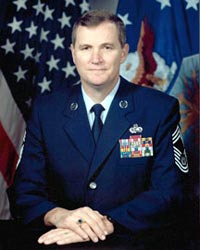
CMSAF Eric Benken

1950's -- Chief Master Sgt. of the Air Force Eric Benken was appointed as the 12th chief master sergeant of the Air Force.